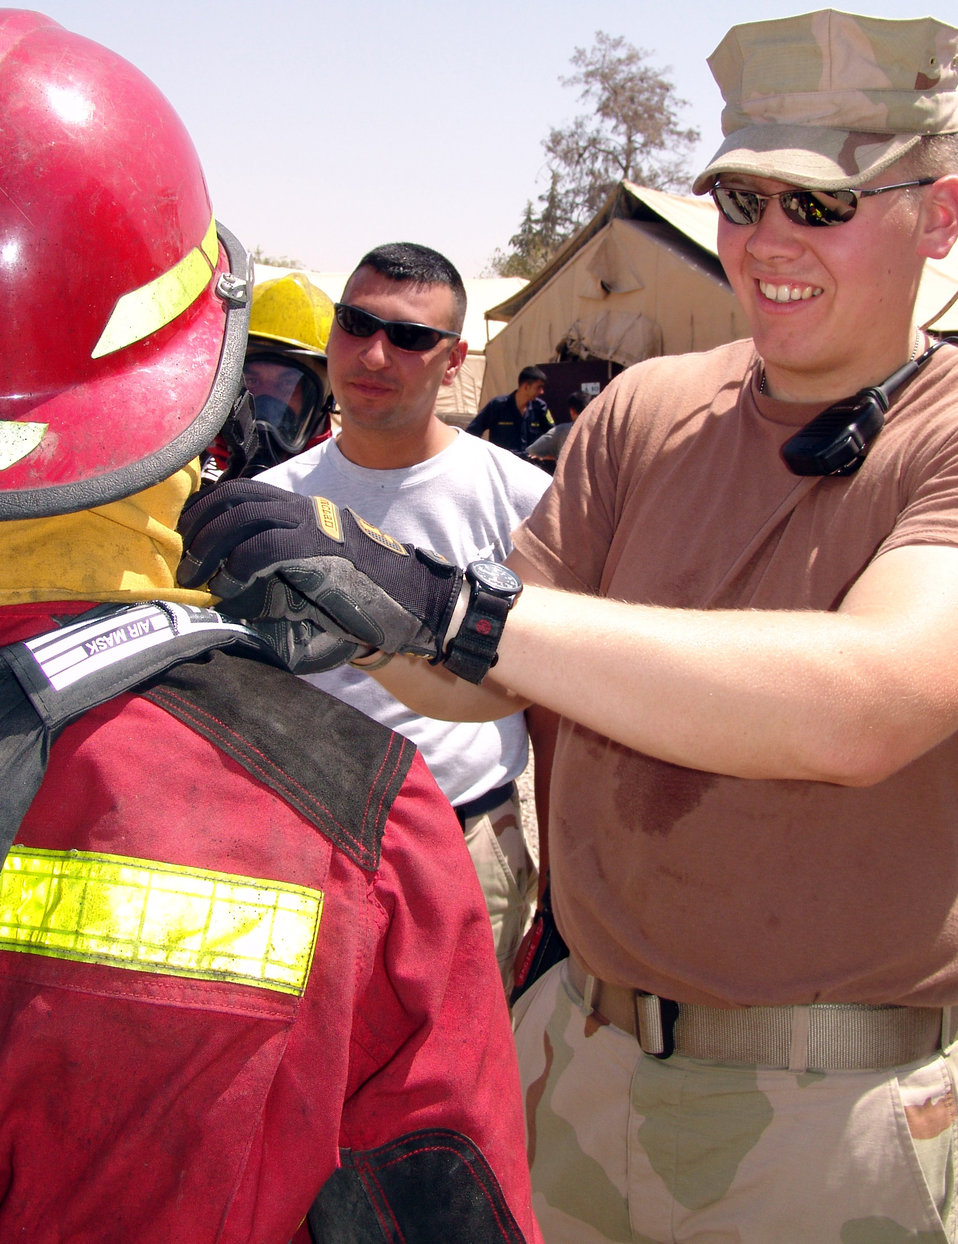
Kirkuk firefighters train Iraqis

KIRKUK AIR BASE, Iraq -- Senior Airman Kyle Milan adjusts an Iraqi's gear before he enters a training fire. Many of the Iraqis being trained are first responders for oil pipeline fires. Airman Milan is assigned to the 506th Expeditionary Civil Engineer Squadron.